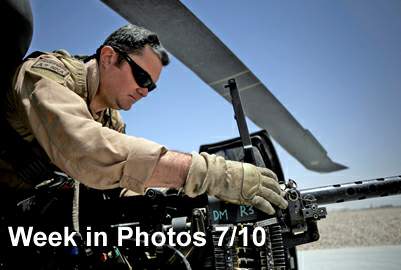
Air Force Week in Photos for July 10 highlights photos from around the Air Force. In this photo by Staff Sgt. Shawn Weismiller, Tech. Sgt. Brock Woodward performs a preflight inspection of a .50-caliber machine gun at Camp Bastion, Afghanistan.